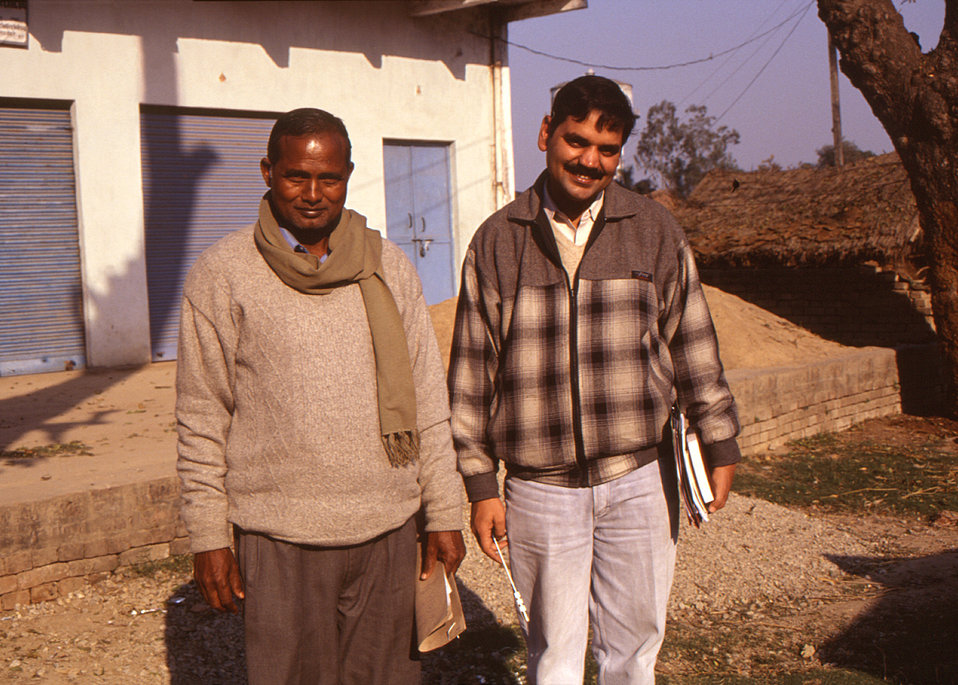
In this 2000 photograph, surveillance Medical Officer, Dr. Bharti (left), and a local physician (right) are depicted standing in one of India's rural villages, were they'd met to discuss polio surveillance activities in that locale. The image was provided by Chris Zahniser, B.S.N., R.N., M.P.H., a STOP Transmission of Polio (STOP) immunization initiative team member and photographer. Ms. Zahniser was at the time assigned to the state of Uttar Pradesh in northern India, and spent three months working in the Districts of Gorakhpur and Deoria.